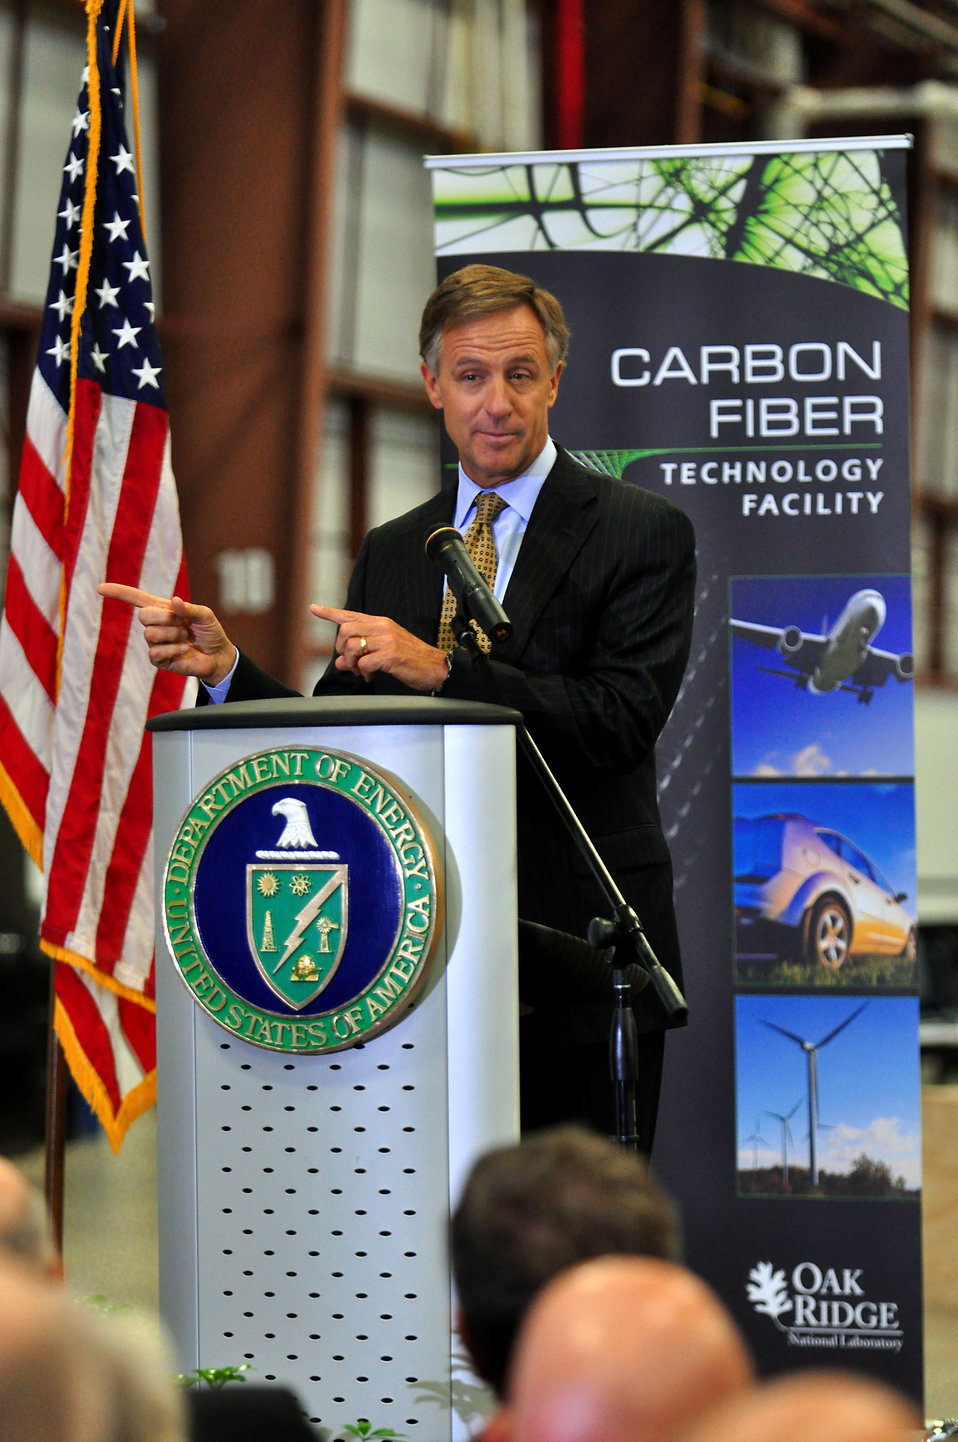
Carbon Fiber Technology Facilty Open House Oak Ridge Tennessee

13-025 DOE photo Lynn Freeny
Governor State of Tennessee Bill Haslam